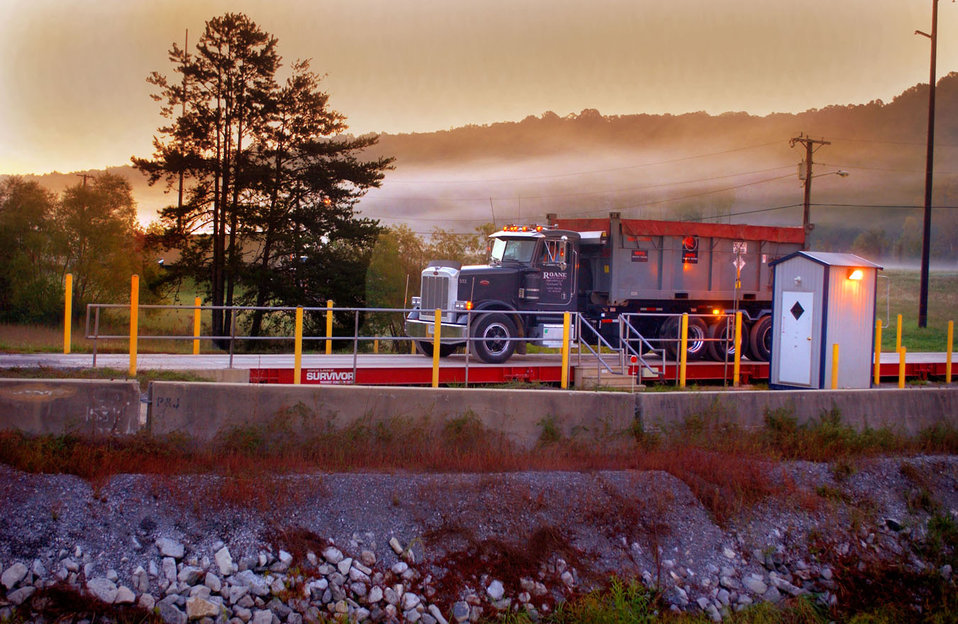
Environmental Management Waste Management Facility (EMWMF)

04-245-25 DOE photo by Lynn Freeny

Truck hauling waste at the Environmental Management Waste Management Facility (EMWMF) June 2004